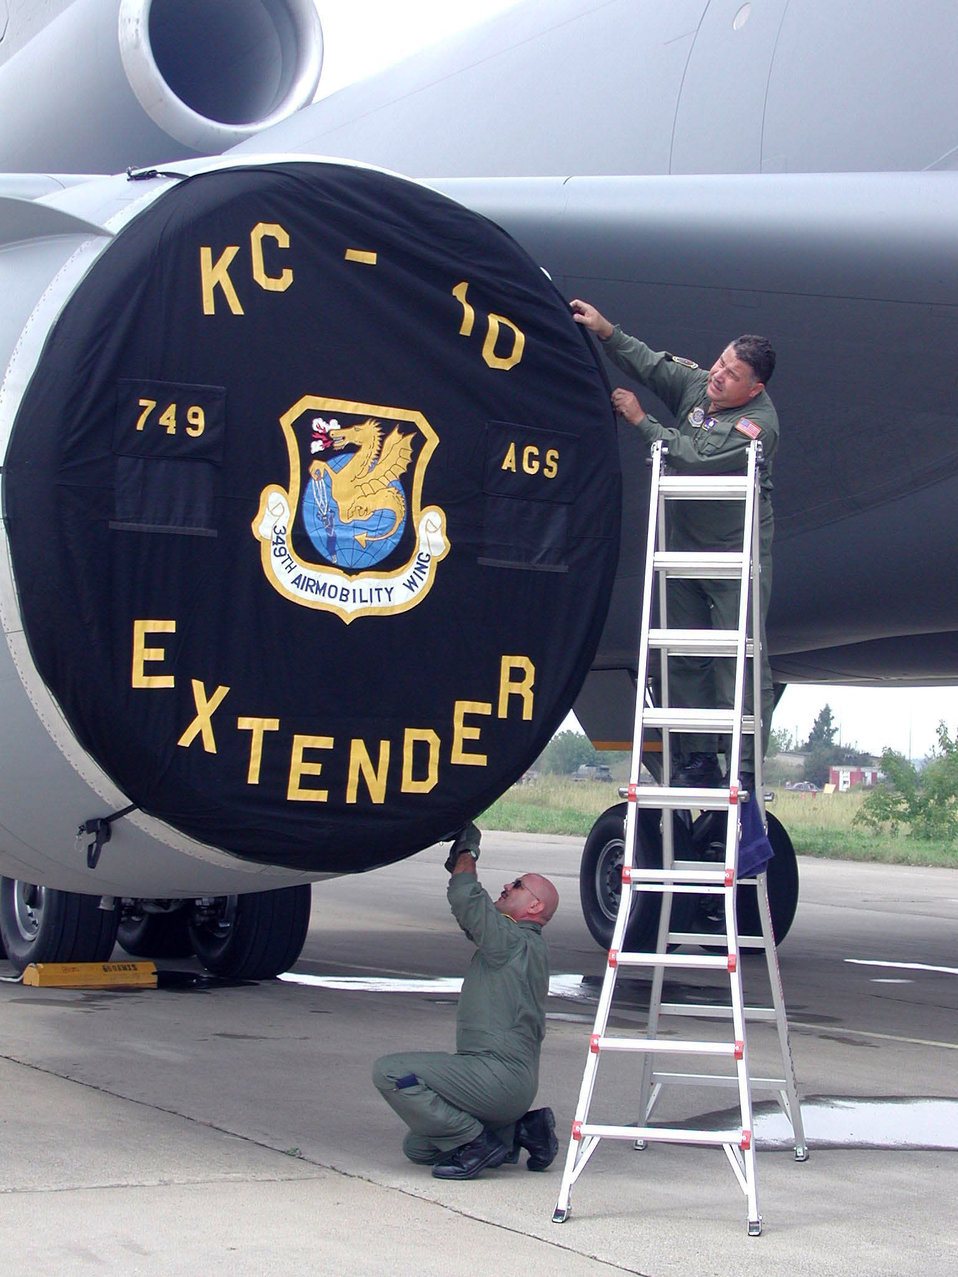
Moscow Air Show

ZHUKOVSKY, Russia -- Master Sgts. Mario Andujo (left) and Raul Garcia place an engine cover on a KC-10 Extender after arriving at Ramenskoye Airfield for the Moscow International Aviation and Space Salon. About 100 U.S. servicemembers are participatin in the air show Aug. 16 to 21. The Airmen are crew chiefs from the 749th Aircraft Maintenance Squadron at Travis Air Force Base, Calif.